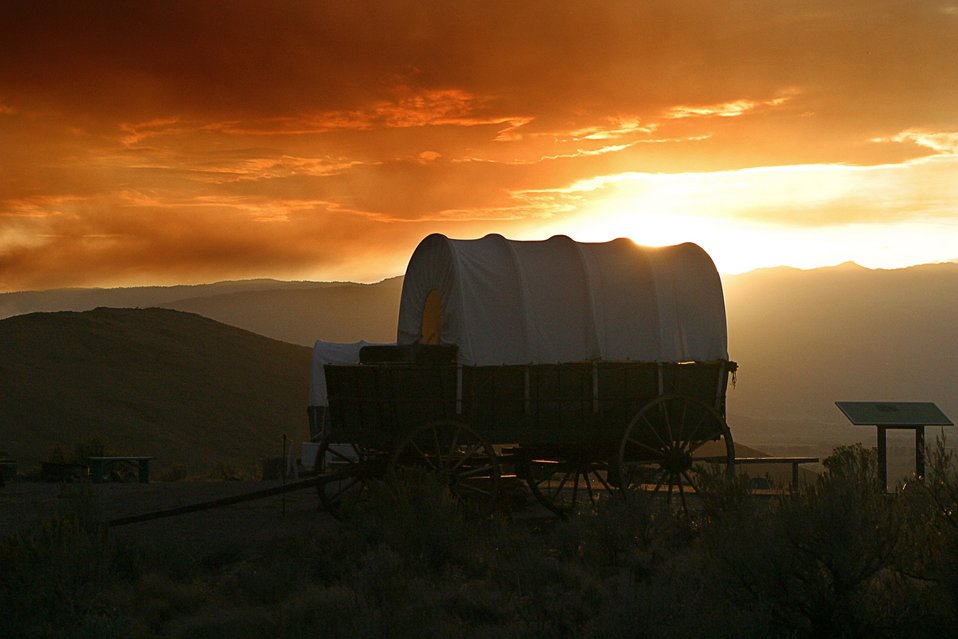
October sunset on wagon encampment at National Historic Oregon Trail Interpretive Center.